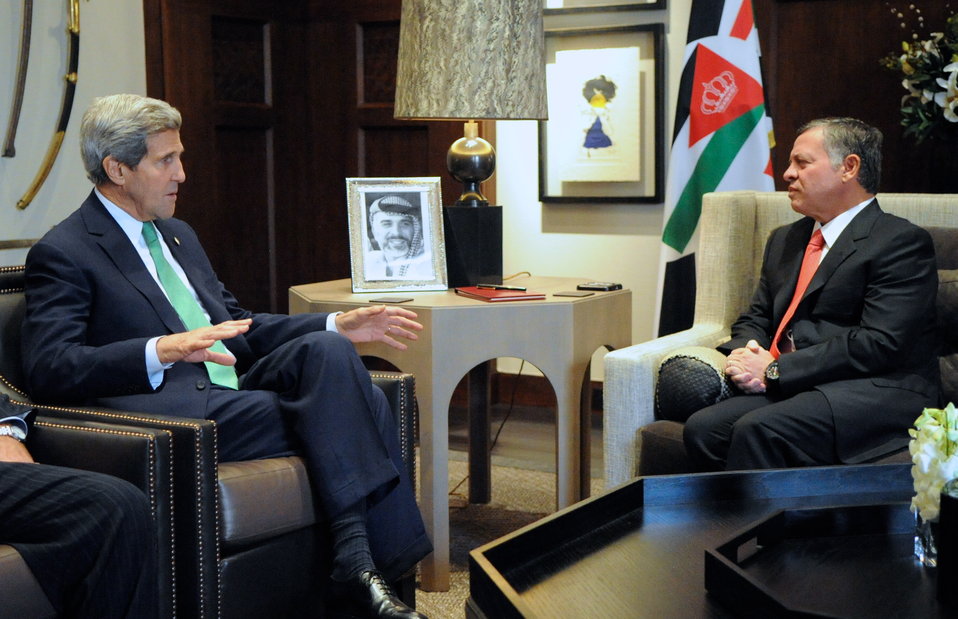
Secretary Kerry Speaks With Jordanian King Abdullah II in Amman

U.S. Secretary of State John Kerry speaks with King Abdullah II of Jordan at Al Hummar Palace in Amman, Jordan, at the outset of talks on November 7, 2013, that focused on Middle East issues.